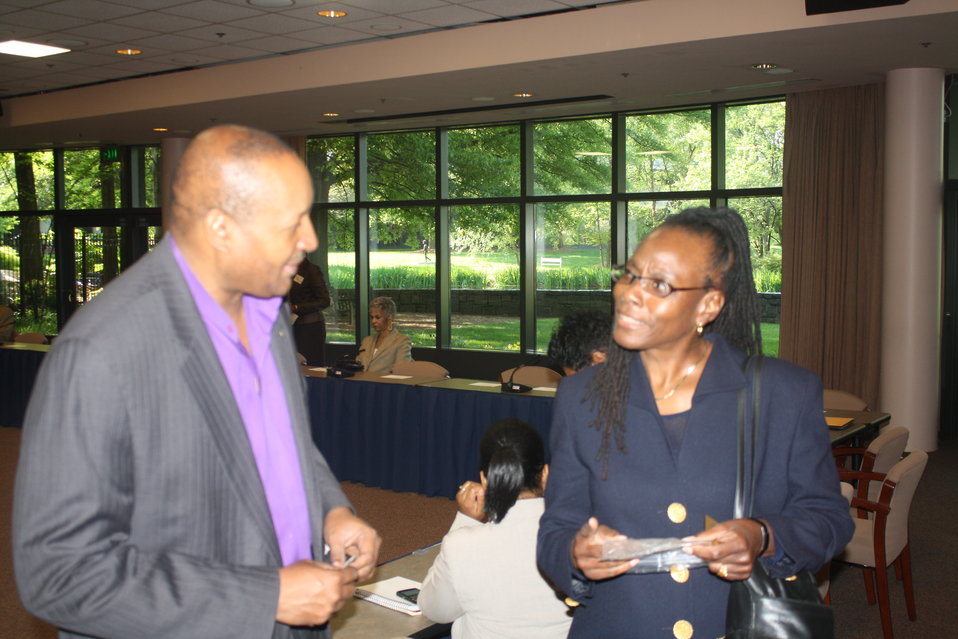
Faith-Based and Neighborhood Partnership launch at Atlanta's Carter Center